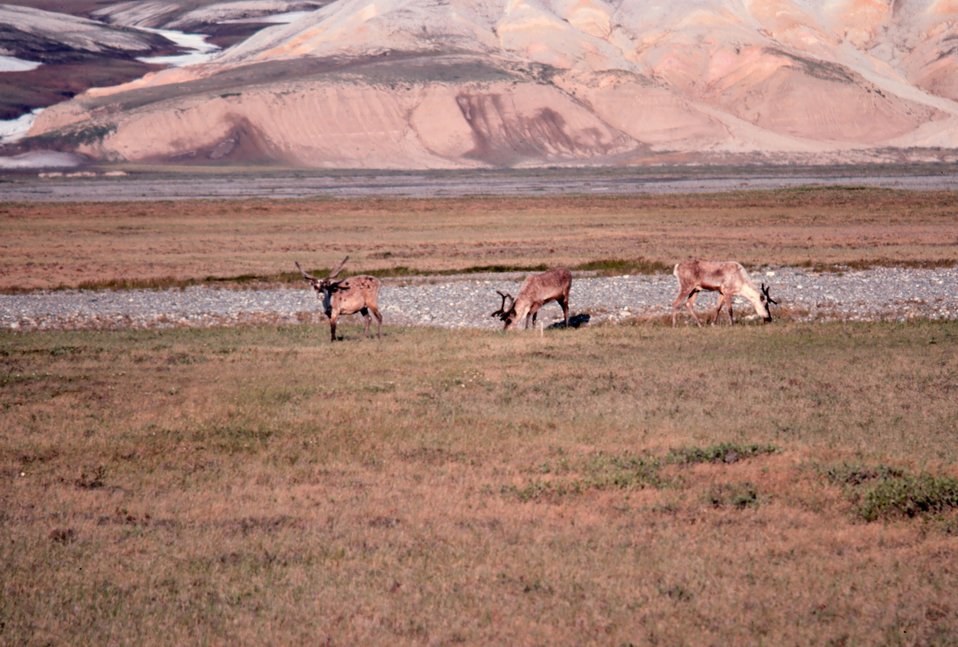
Caribou - Rangifer tarandus.